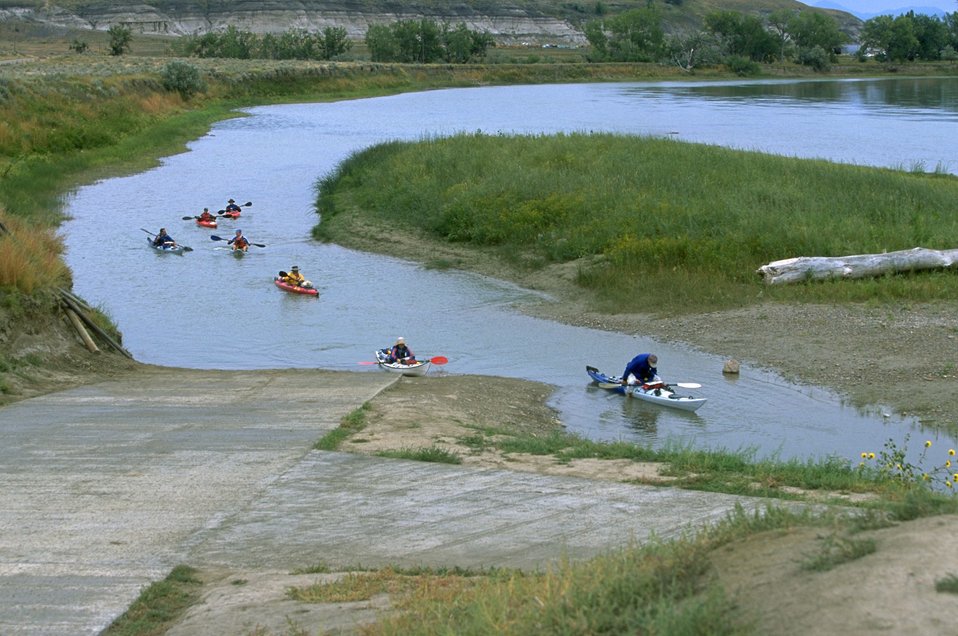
Floating the Upper Missouri River